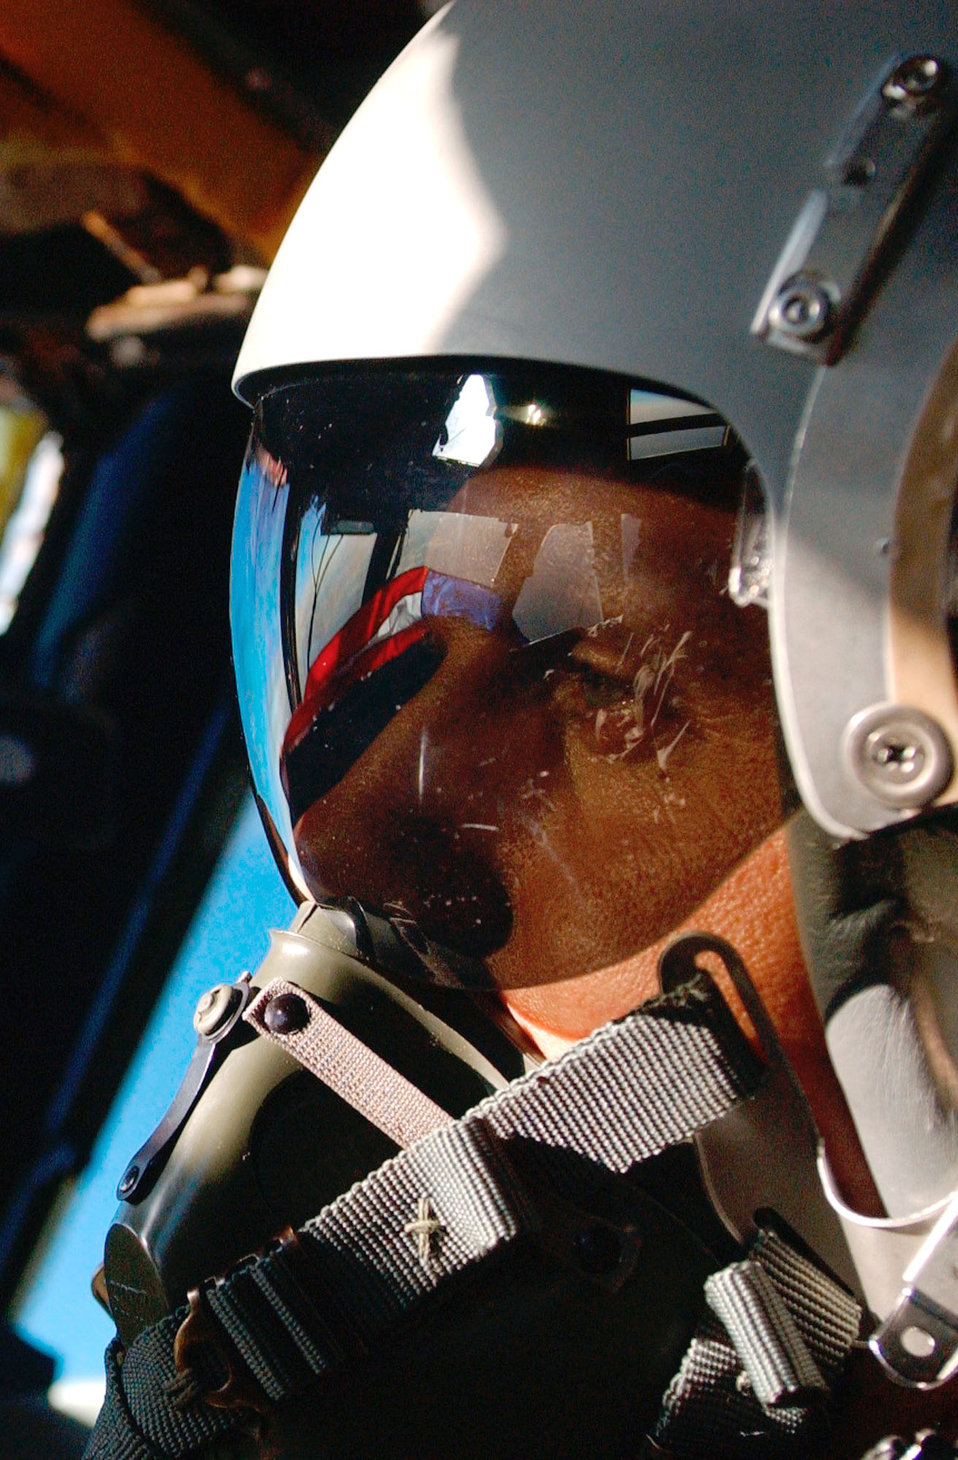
Looking out for trouble

OPERATION ENDURING FREEDOM -- A B-52 Stratofortress co-pilot from the 40th Expeditionary Bomb Squadron scans the sky ahead. The bomber flew a mission over Afghanistan, May 14, 2003 in support of Operation Enduring Freedom.